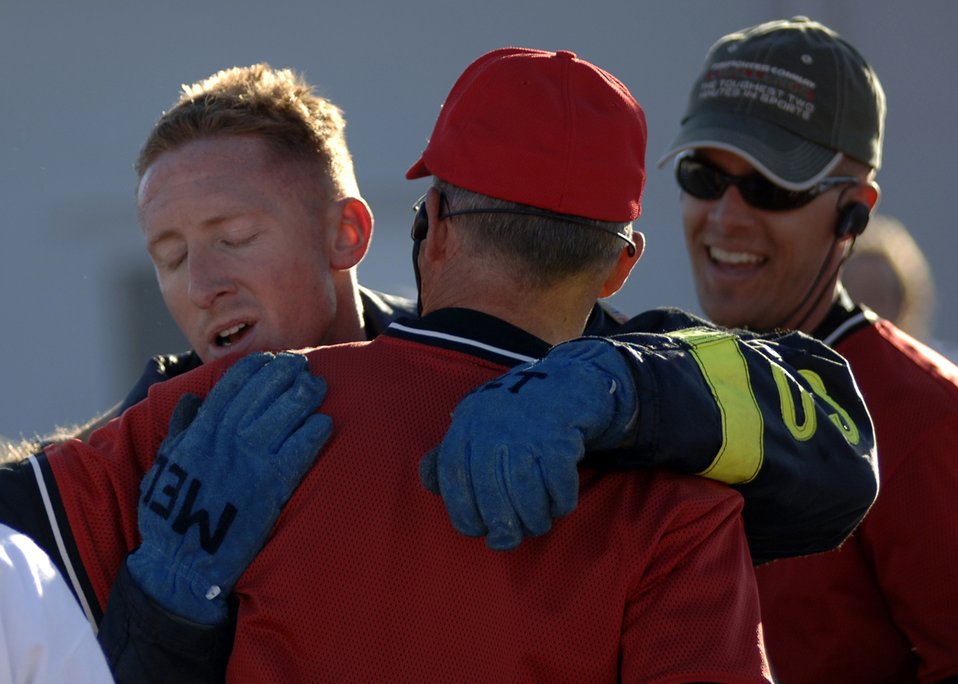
Intense Firefight

Tech. Sgt. Mike Melto, Team Travis, collapses after completing the intense obstacle portion of the Firefighter Combat Competition at Morrow, Ga., Oct. 13, 2006.